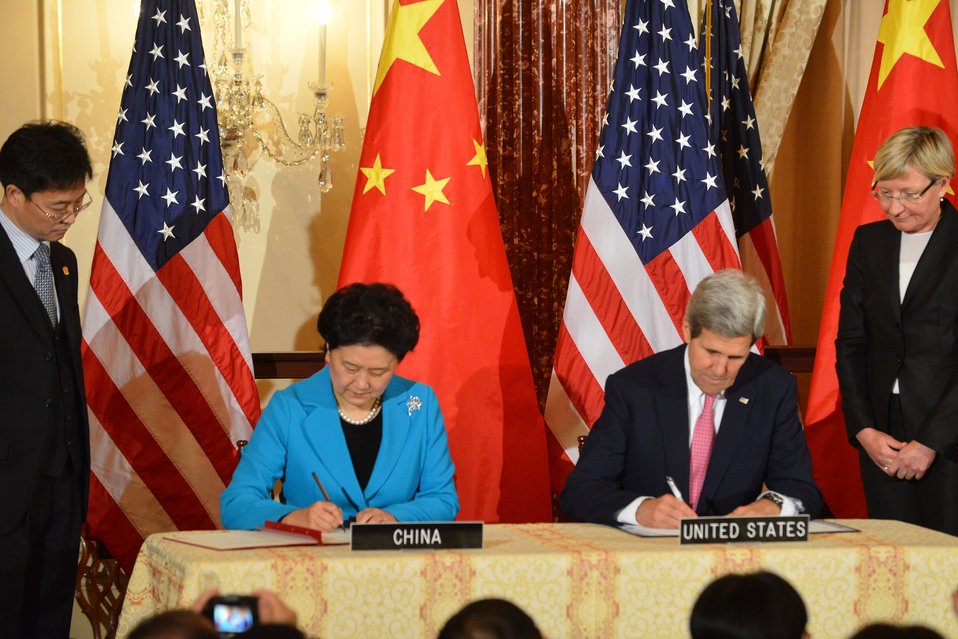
Secretary Kerry and Chinese Vice Premier Liu Yandong Sign an Updated MOU for the CPE

U.S. Secretary of State John Kerry and Chinese Vice Premier Liu Yandong sign an updated Memorandum of Understanding for continuation of the U.S.-China High-Level Consultation on People-to-People Exchange (CPE) at the U.S. Department of State in Washington, D.C., on November 21, 2013.